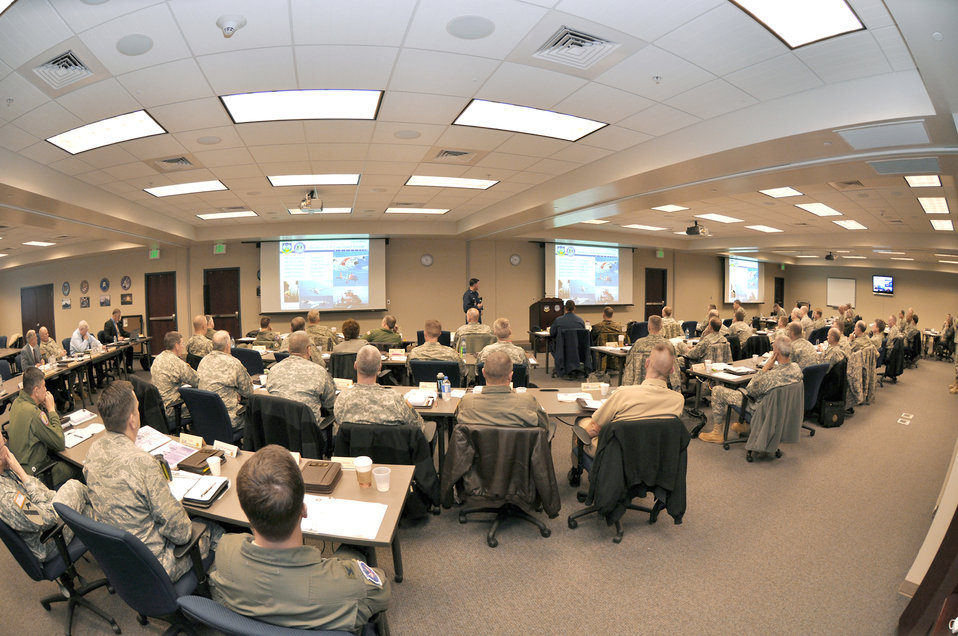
'Mission One' at NORTHCOM: Defending the homeland

Senior Army and Air National Guard officers join officers from other components at a Joint Task Force Commander Training Course at U.S. Northern Command at Peterson Air Force Base Jan. 28, 2009, in Colorado Springs, Colo.